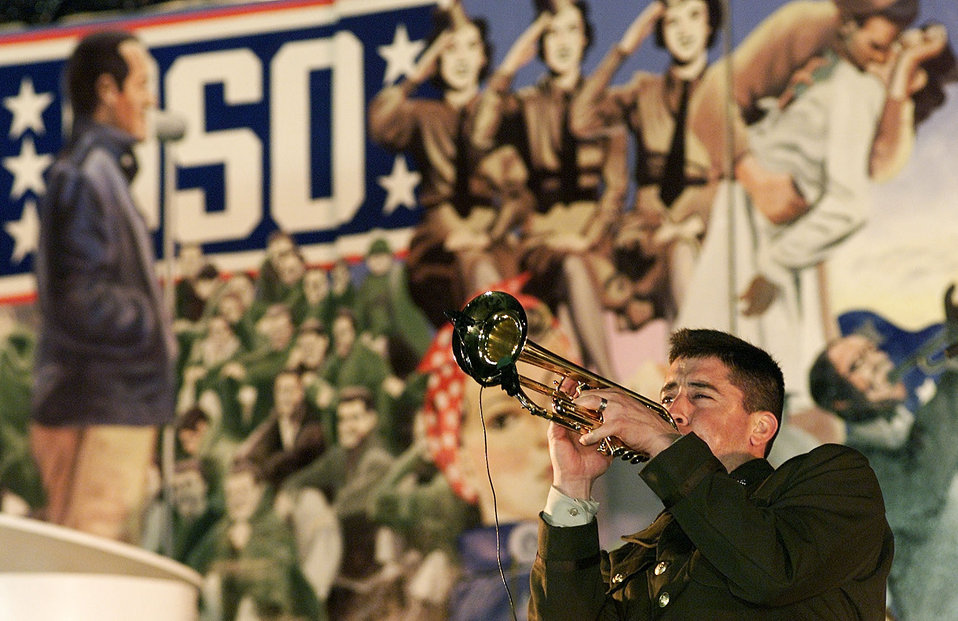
Trumpet solo

MACDILL AIR FORCE BASE, Fla. -- An Air Force Tops in Blue trumpeter performs a solo. The Air Force Tops in Blue performed at the NFL Players Huddle Party here January 23, 2001. Personnel and aircraft from various bases around the nation are deployed to the base as part of a week of events leading up to Superbowl XXXV.